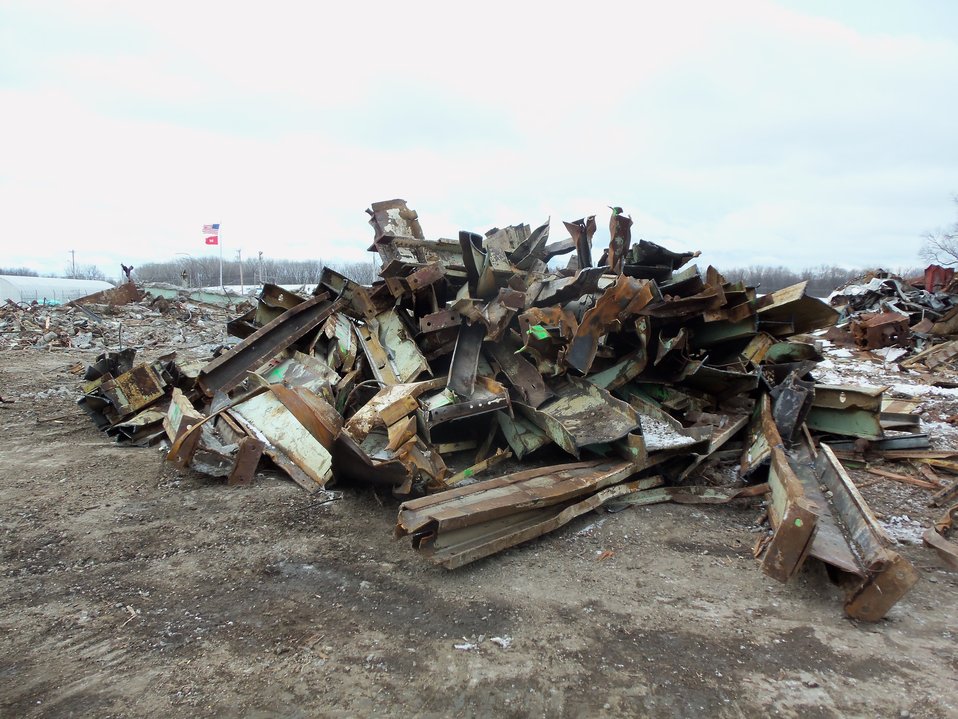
BLDG 401 STEEL DEBRIS

Activities from the Niagara Falls Storage Site, which is associated with the former Lake Ontario Ordnance Works. Formerly Utilized Sites Remedial Action Program (FUSRAP), a program initiated in 1974 to identify, investigate and clean up or control sites that were part of the Nation's early atomic energy and weapons program. Activities at the sites that are eligible for FUSRAP were conducted by Manhattan Engineer District (MED) or the Atomic Energy Commission (AEC), both predecessors of the Department of Energy (DOE). The U.S. Army Corps of Engineers was assigned management of FUSRAP by Congress in 1997.